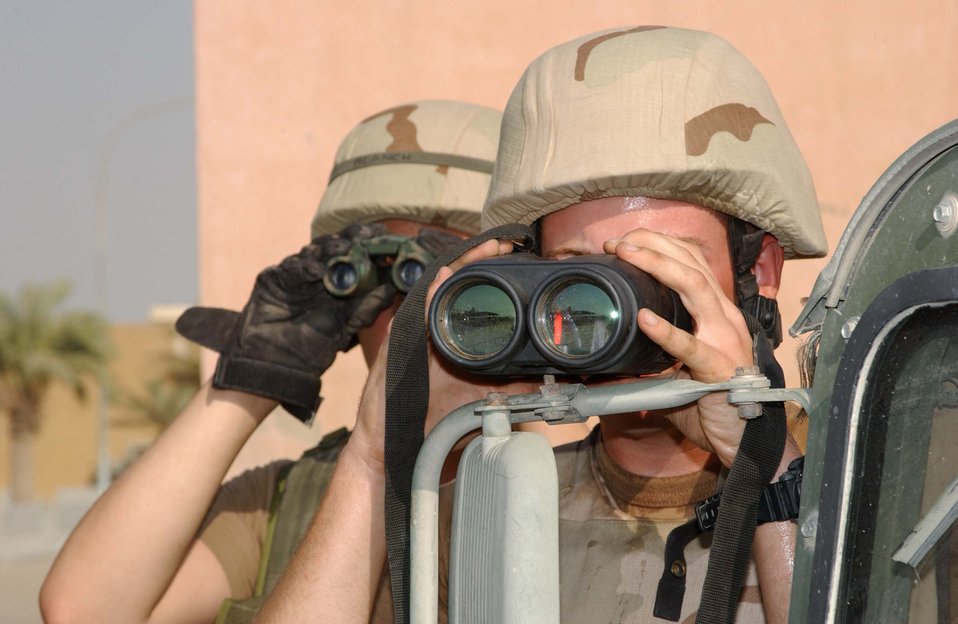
EOD Airmen rely on high-tech, raw nerves

ALI BASE, Iraq -- Explosive ordnance disposal Airmen with the 407th Air Expeditionary Group monitor the progress of a robot as it slowly moves in to investigate a suspicious package found unattended on base.